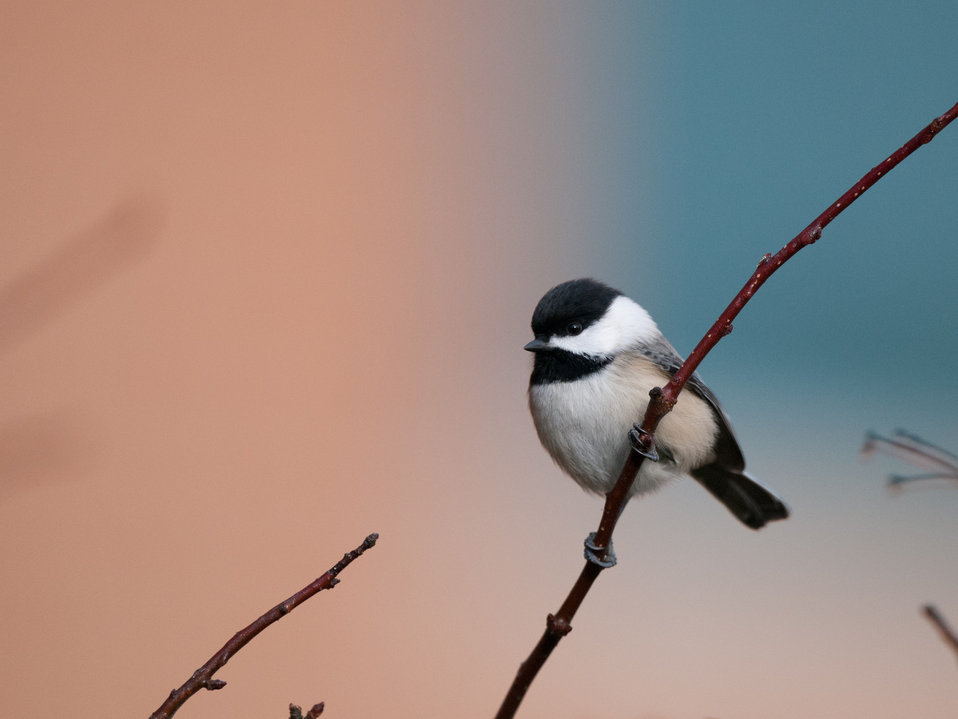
Black-capped Chickadee

Photographed outside the Regional Office in Hadley, MA.